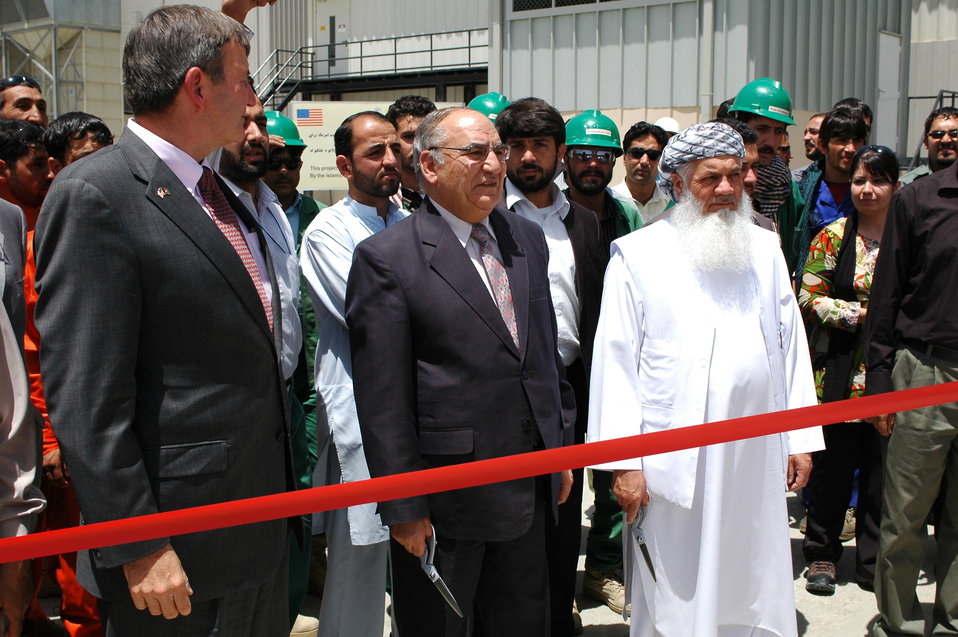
105 MW Tarakhil Power Plant Handover